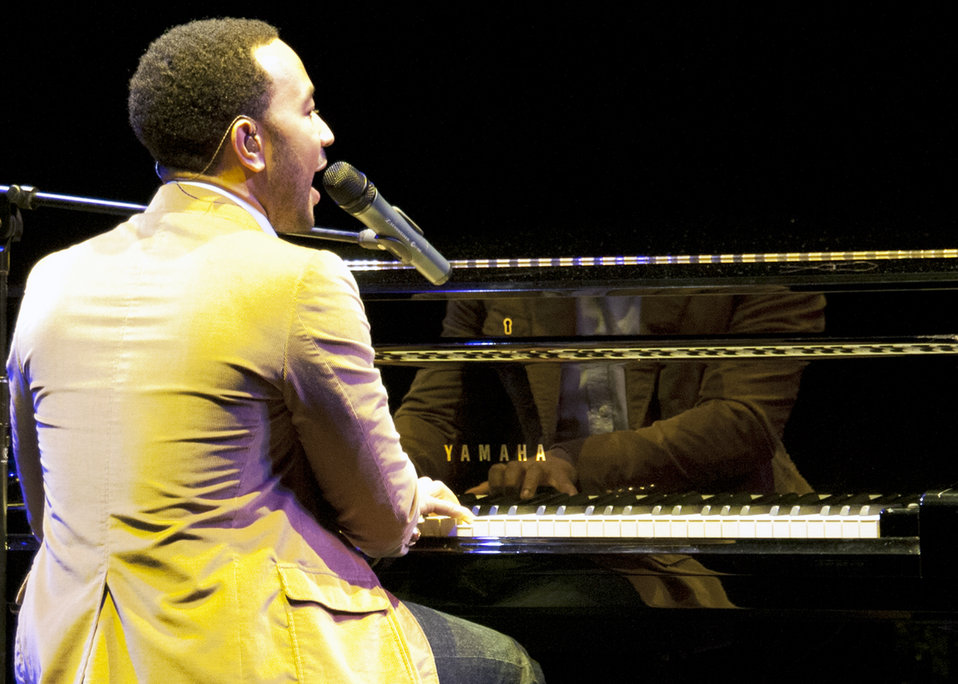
John Legend entertains troops in Florida

Six-time Grammy winning R & B singer John Legend entertained a crowd of more than 1,000 Nov. 14, 2010, in Niceville, Fla. The show was part of the Air Force Reserve's